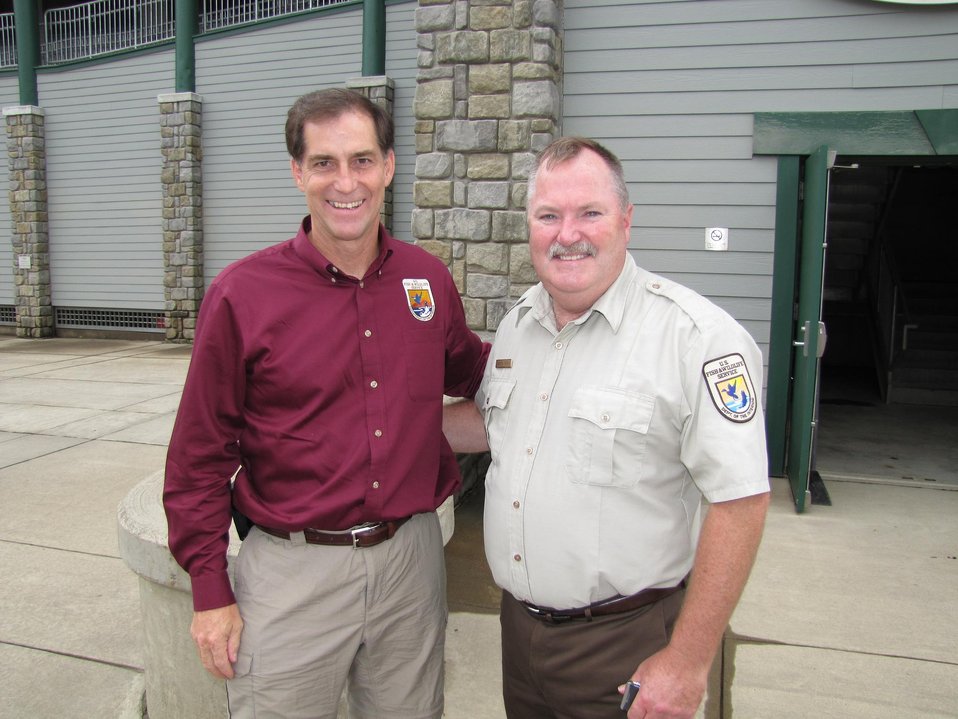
USFWS Director Dan Ashe and Refuge Manager Andy French